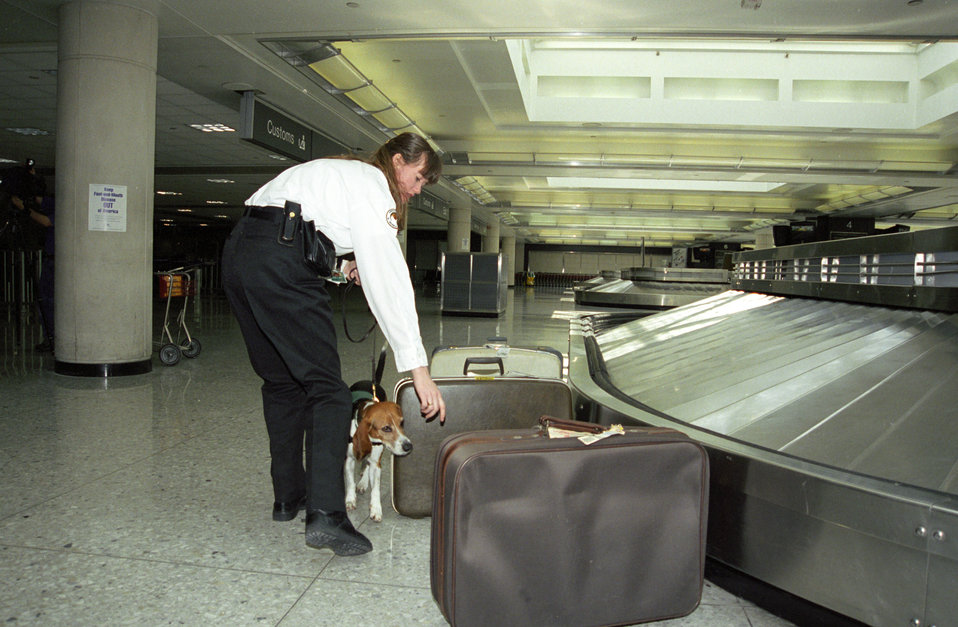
This beagle is searching luggage for contraband at Washington Dulles International Airport in Chantilly, VA on March 14, 2001. The Beagle Brigade is a team of beagles and their human handlers who, as part of the U.S. Department of Agriculture's (USDA) Animal and Plant Health Inspection Service (APHIS) inspect luggage at U.S. airports searching for agricultural products. The Beagle Brigade program averages around 75,000 seizures of prohibited agricultural products a year. Unauthorized meat, animal byproducts, fruit and vegetables can carry diseases and pests that have the potential to infect U.S. agriculture. APHIS works in conjunction with the U.S. Customs and Border Protection and the U.S. Public Health Service at entry points to the U.S., including land borders, ports and airports. The Beagle Brigade generally works in the baggage-claim area at international airports. After 911, the Beagle Brigade is under the authority of Homeland Security.